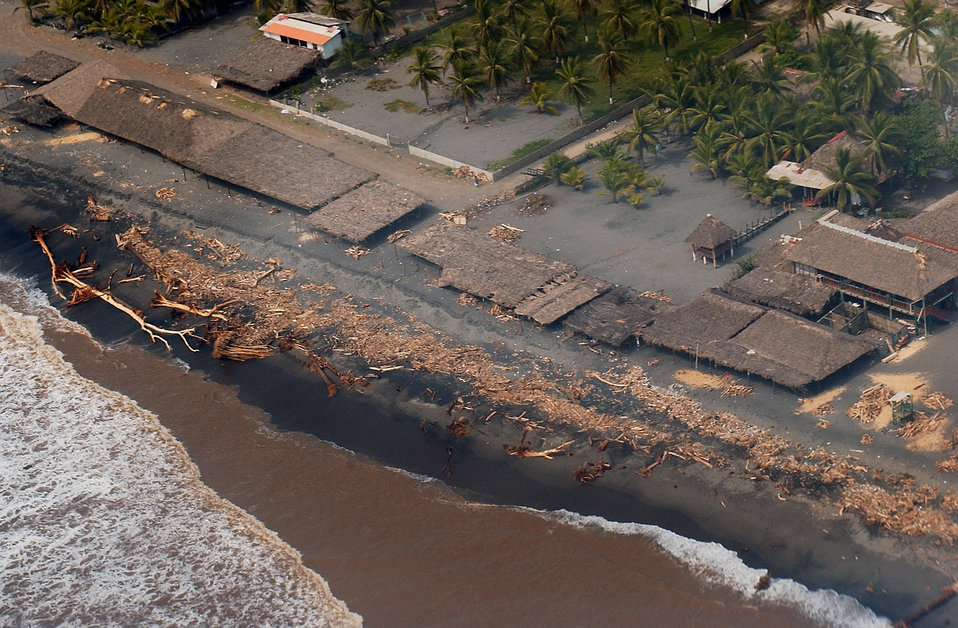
Guatemala relief aid

OCOS, Guatemala -- An aerial view reveals the damage caused by Hurricane Stan to the the village of Ocos in Guatemala. Members of Joint Task Force-Bravo left Honduras Oct. 7 to deliver relief supplies to Ocos and other communities affected by the storm.